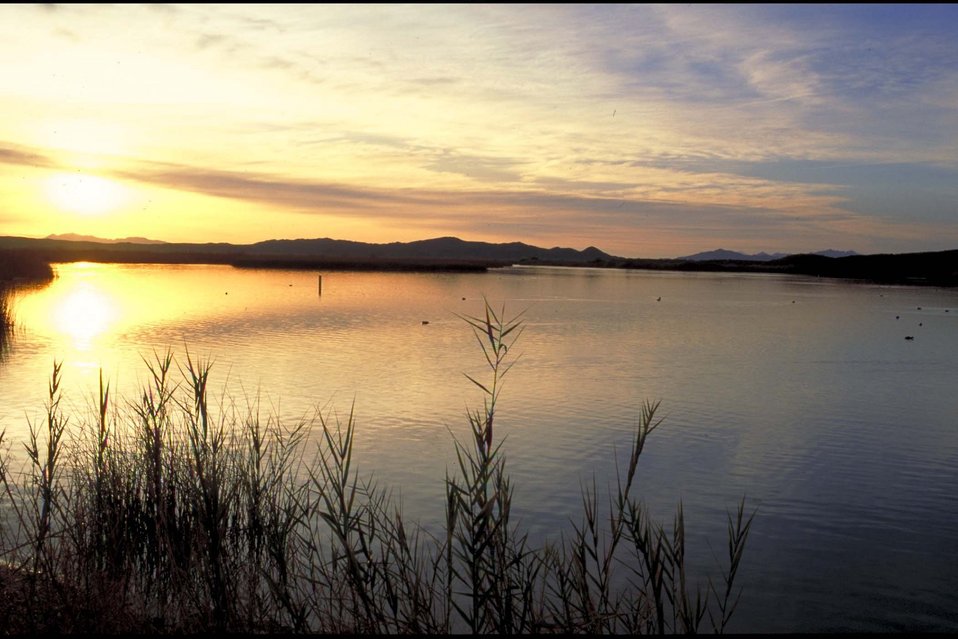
Sunrise at Mittry Lake